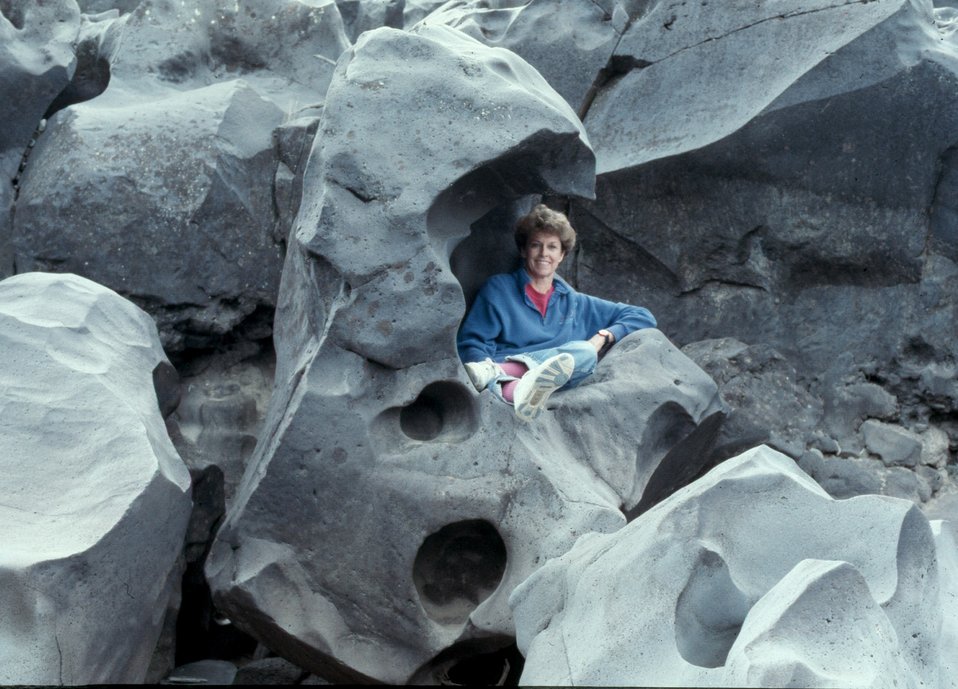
Boulder Shoshone Field Office USRD Upper Snake River District